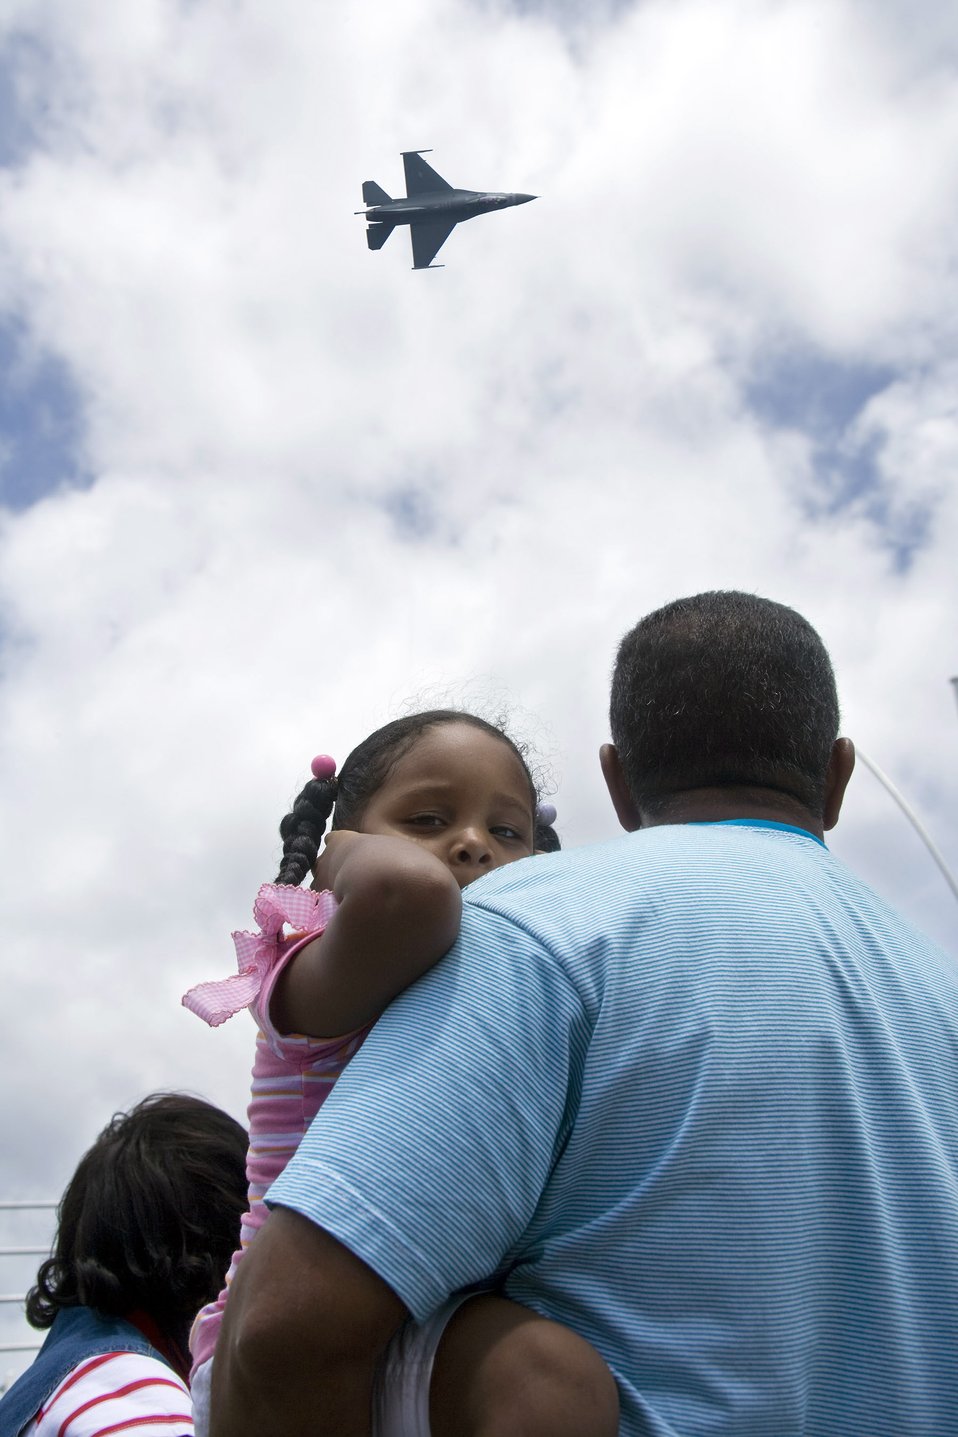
Dutch Navy Days

A local child covers her ears as an F-16 Fighting Falcon, flown by Capt. George Clifford of the Viper East F-16 demonstration team, flies over Curacao, Netherlands Antilles. The Viper East team, from Shaw Air Force Base, S.C., joined officials from Air Forces Southern headquarters at Davis-Monthan AFB, Ariz., to augment